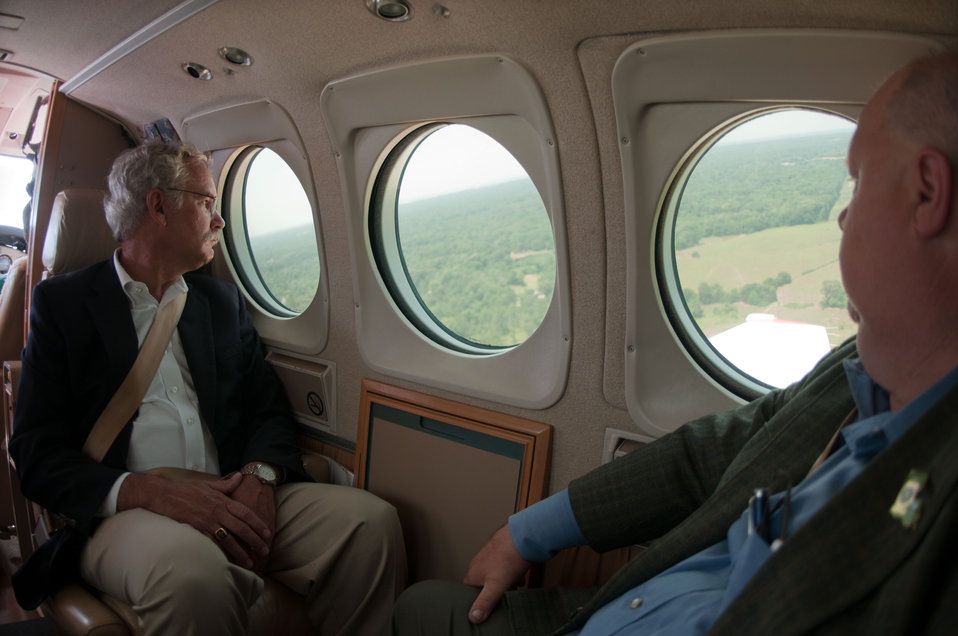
Louisiana Department of Agriculture and Forestry Commissioner Mike Strain DVM (right) provided Acting Under Secretary Farm and Foreign Agriculture Service Michael Scuse (left); and Under Secretary for Rural Development Dallas Tonsager the second of three aerial observation flights to see different regions of crop condition, seepage and inundation from the Mississippi flood waters as well as the time to participate in task force meetings addressing housing in rural areas and farming. On Thursday, May 19, 2011.